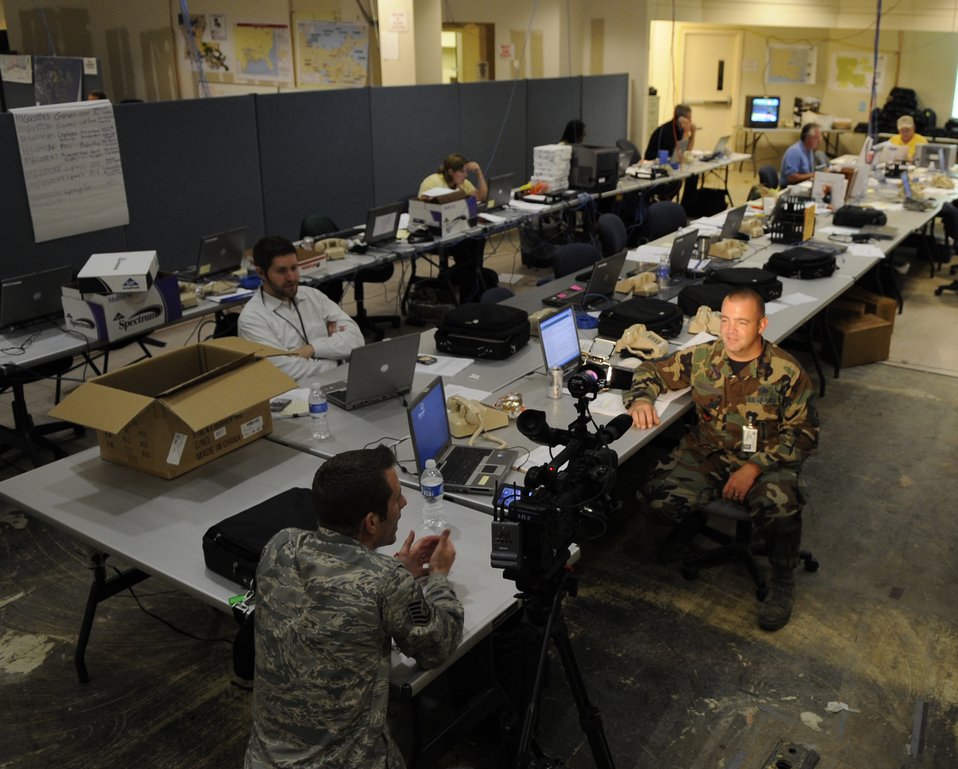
Guard vital to hurricane relief efforts

Tech. Sgt. Lee Hoover, an Air Force News Agency broadcaster, interviews Master Sgt. Glenn Coughlin Sept. 1 at the Hurricane Gustav Joint Field Office in Baton Rouge, La. Sergeant Coughlin, with the Louisiana Air National Guard’s 159th Fighter Wing at Naval Air Station Joint Reserve Base-New Orleans just north of New Orleans, is a logistics supply specialist assigned to assist Federal Emergency Management Agency officials during evacuation and relief efforts.